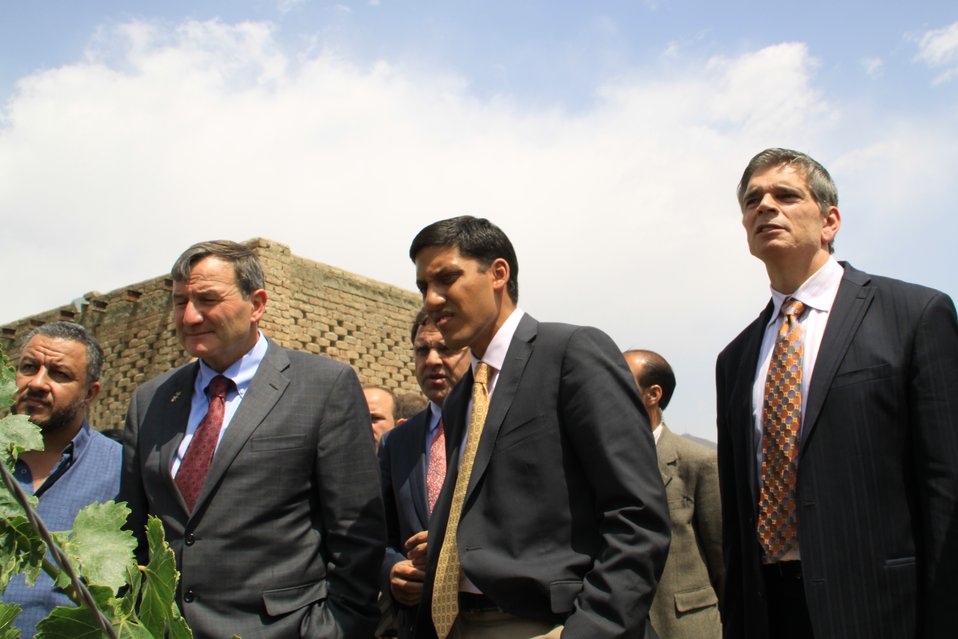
Badam Bagh Farm